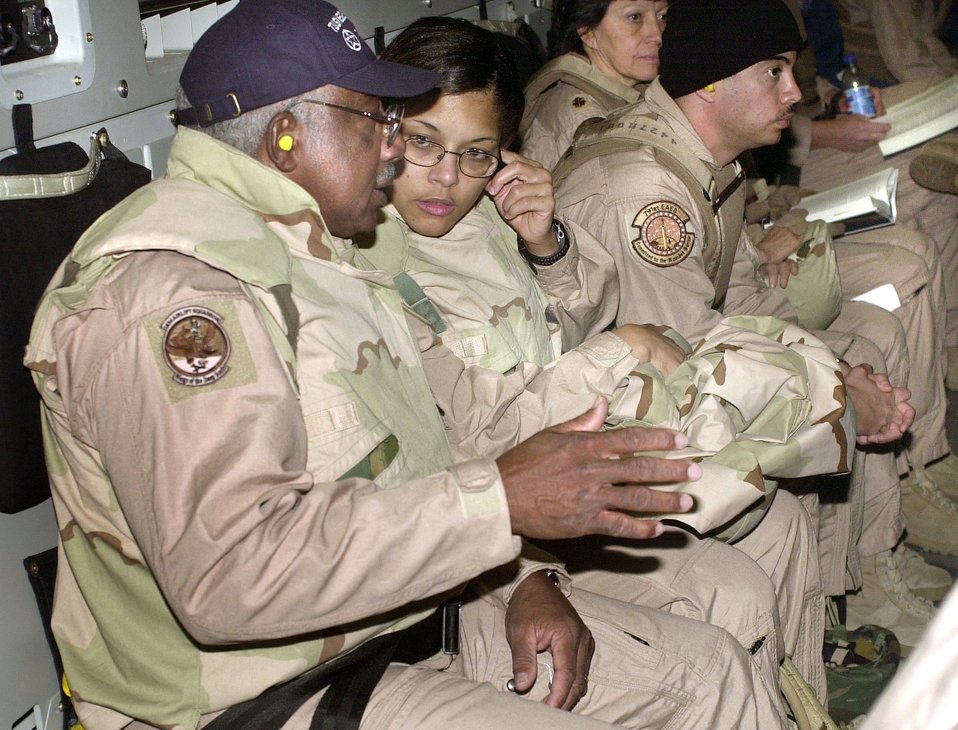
Air pioneers return to war zone

ABOVE IRAQ (AFPN) -- Tuskegee Airman Col. Richard Toliver (left) chats with Maj. (Dr.) Vanessa Williams as their C-17 Globemaster III makes its final approach to Balad Air Base, Iraq. Five of the original Tuskegee Airmen -- the first African-American aviators of World War II -- are visiting the 332nd Air Expeditionary Wing at Balad. The unit is a descendant of the